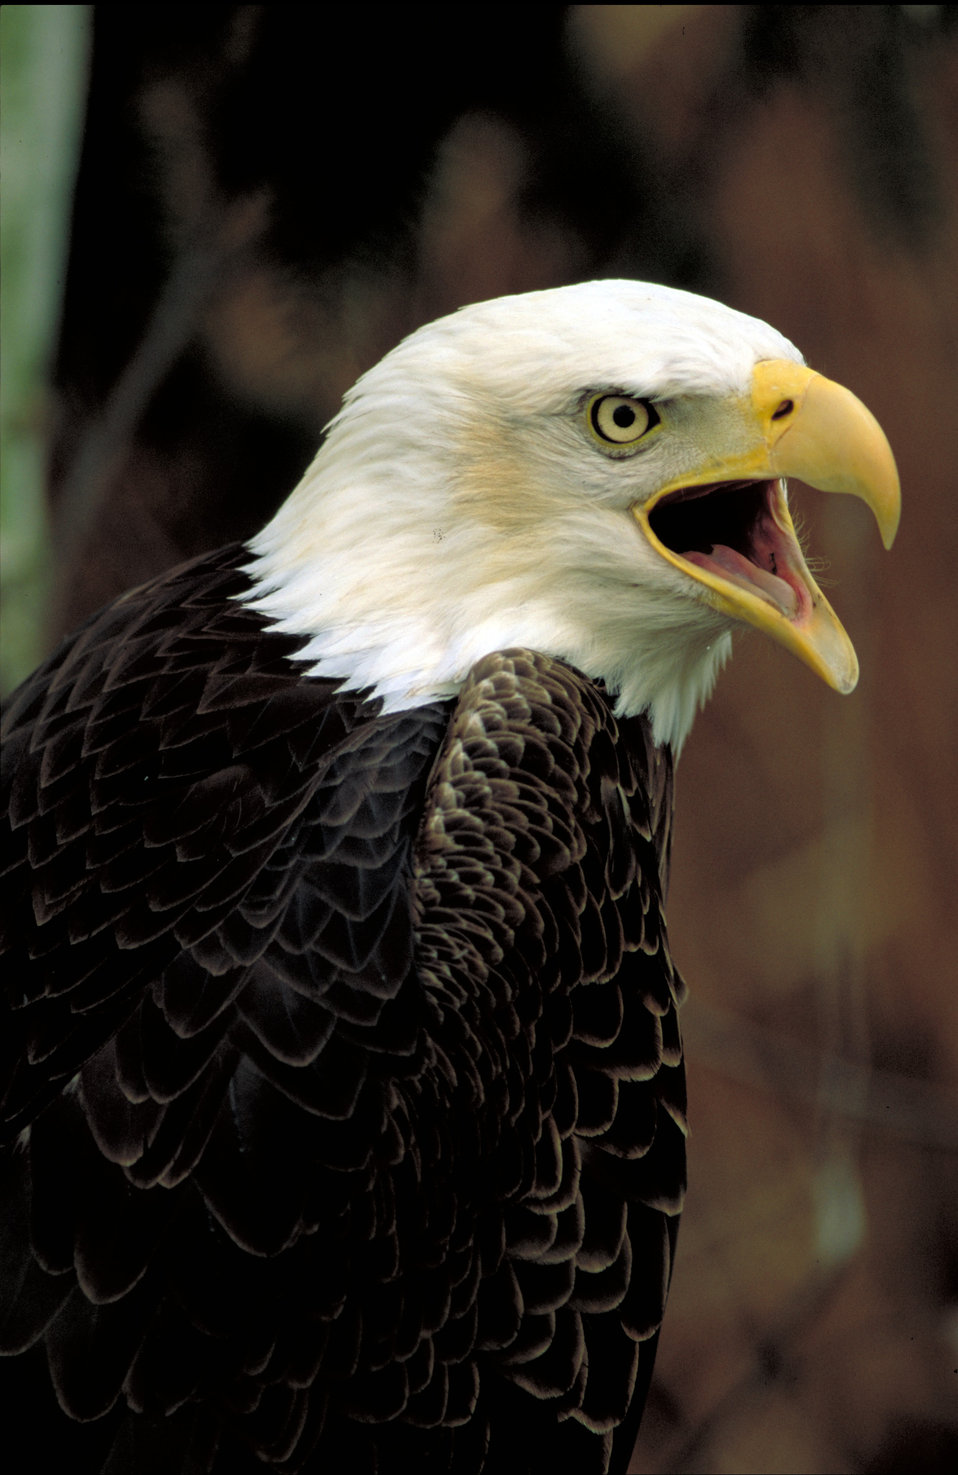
A bald eagle

Close-up view from rear side of a bald eagle looking over its shoulder while calling.